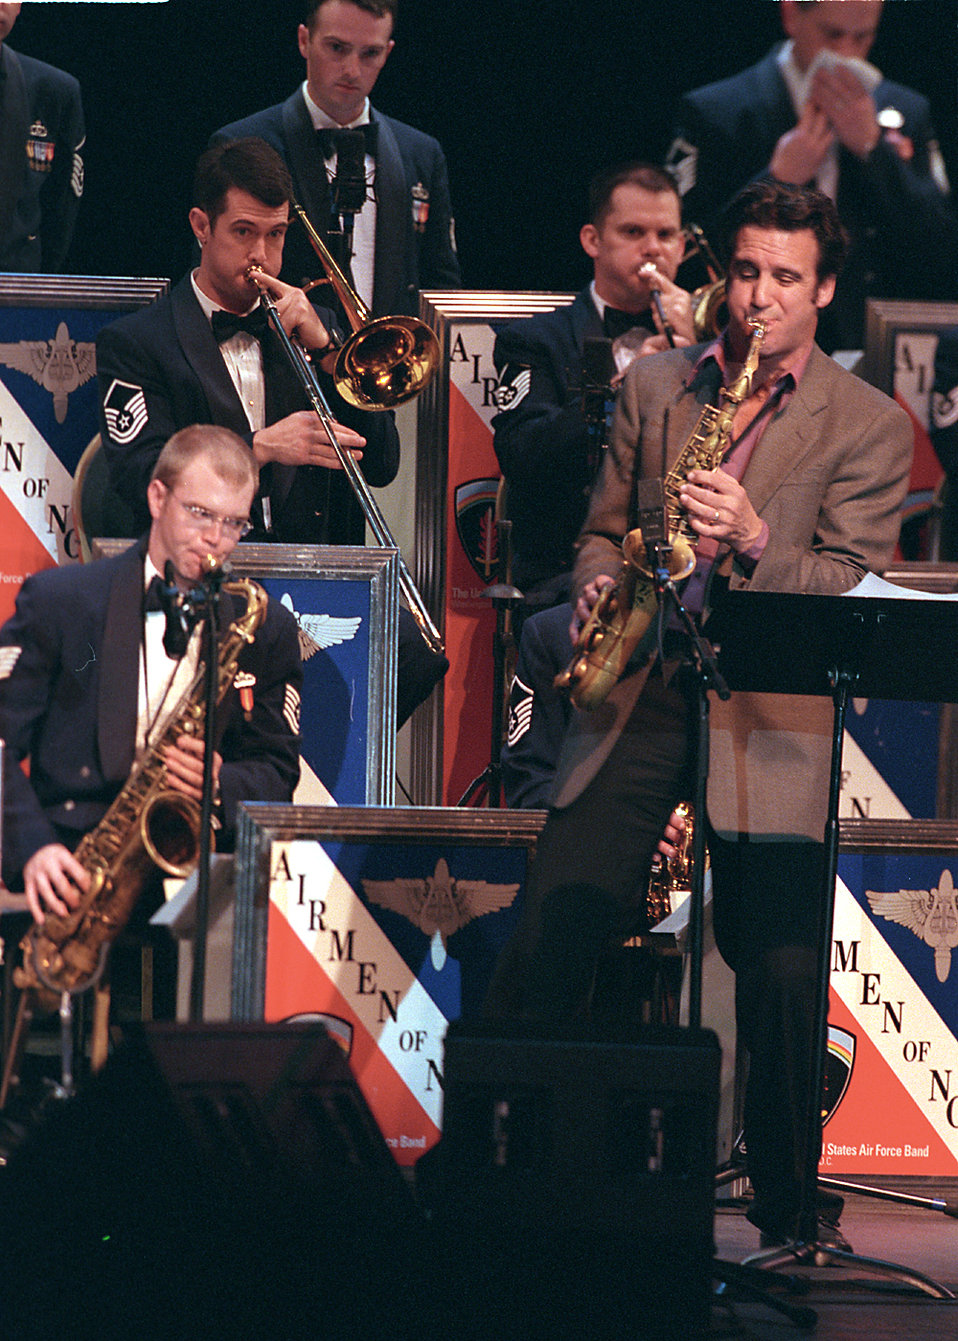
A notable performance

WASHINGTON -- Airmen with the U.S. Air Force Band's Airmen of Note perform with famed saxophonist Eric Marienthal on Nov. 1 at Howard University. It was during the final concert on the band's 2003 Jazz Heritage Series.